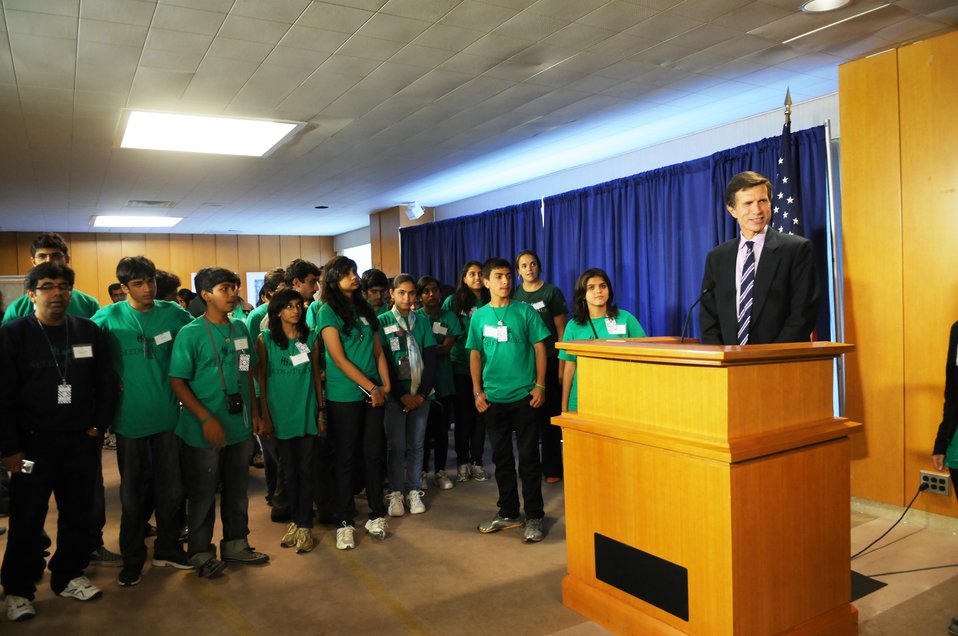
Assistant Secretary Blake Delivers the Opening Remarks

U.S. Assistant Secretary of State for South and Central Asian Affairs delivers the opening remarks at the Seeds of Peace reception at the U.S. Department of State in Washington, D.C., on July 14, 2010.